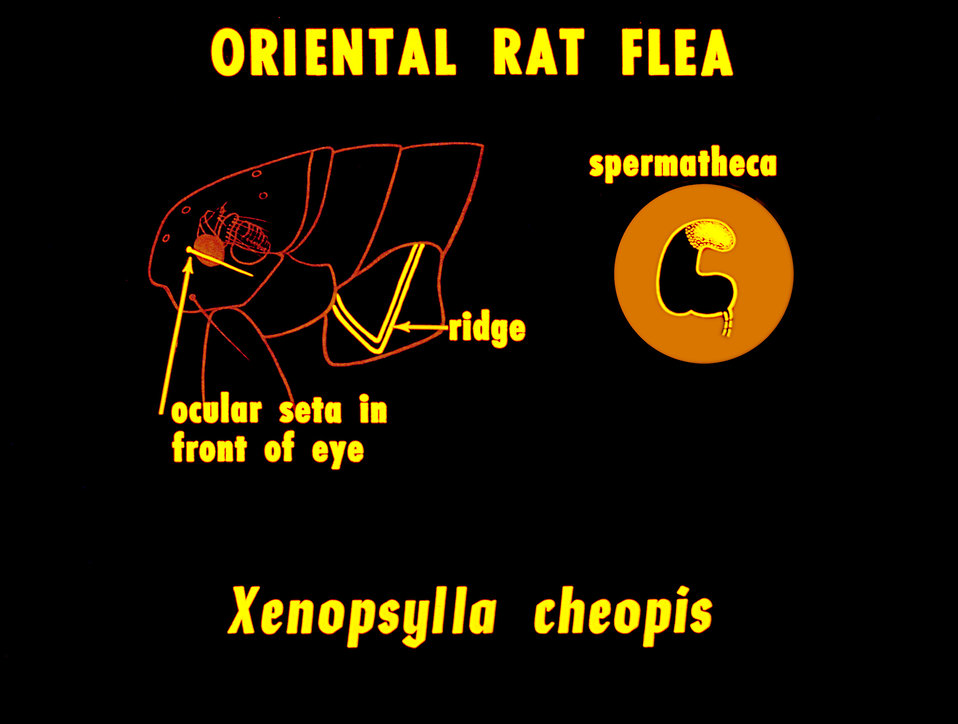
An illustration depicting the anatomical characteristics of the Oriental Rat Flea, Xenopsylla cheopis.